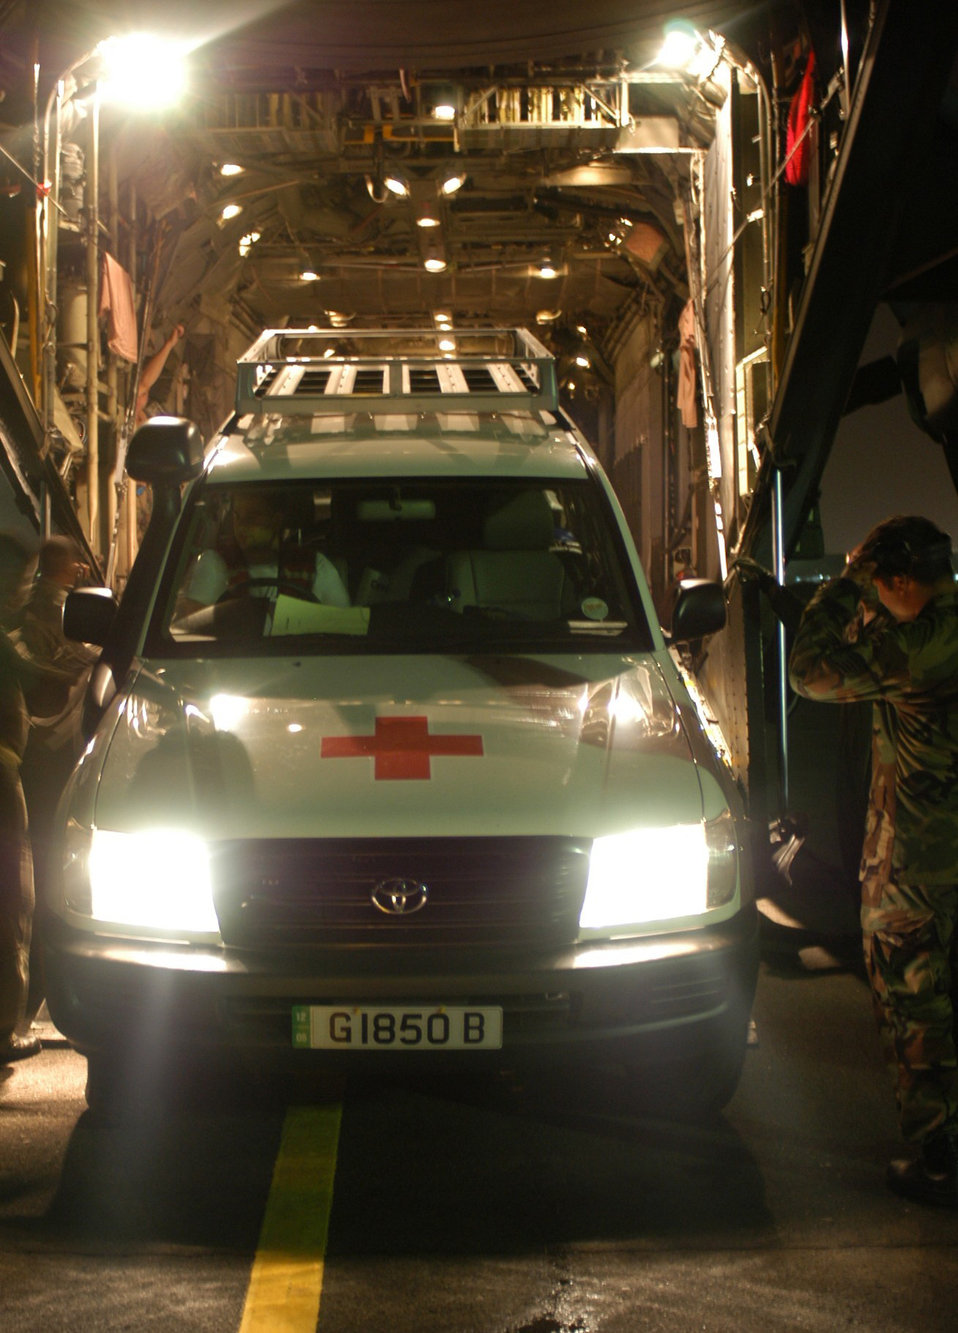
Airmen put relief on target

BANDA ACEH, Indonesia -- Loadmasters guide a Spanish Red Cross support vehicle off an MC-130H Combat Talon II here. Dozens of flights have carried relief supplies and equipment into the region.